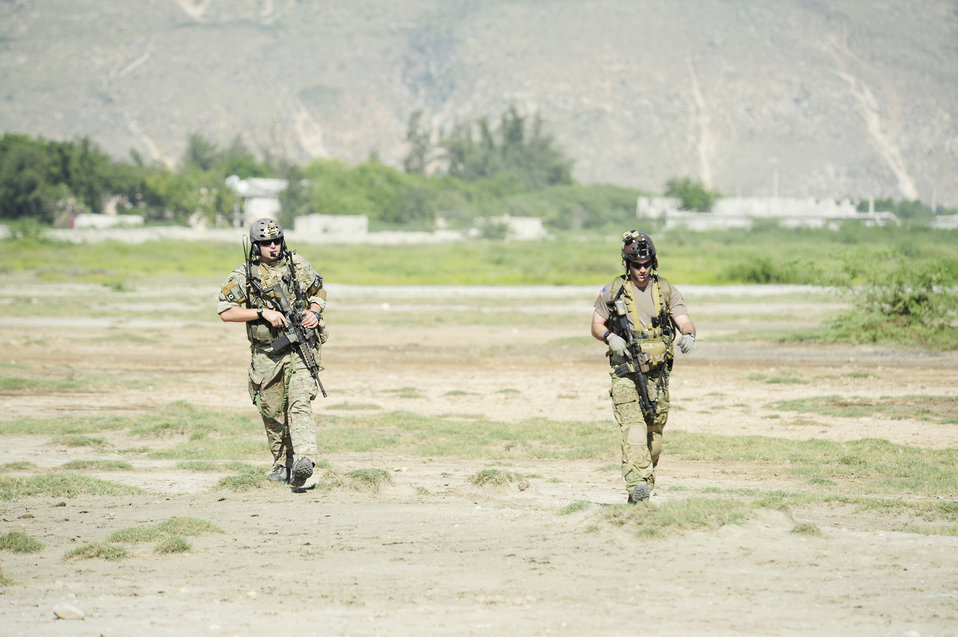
Haiti Earthquake Relief

Air Force combat controllers survey a drop zone prior to an air delivery of humanitarian aid in Port-au-Prince, Haiti, Jan 18, 2010. Department of Defense assets have been deployed to assist in the Haiti relief effort following a magnitude 7 earthquake that hit the city on Jan. 12, 2010. The combat controllers are assigned to the 23rd Special Tactics Squadron at Hurlburt Field Fla.